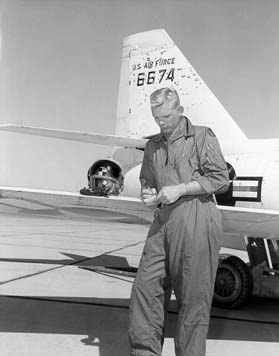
Captain Iven C. Kincheloe Jr.

1950's -- Captain Iven C. Kincheloe Jr. is pictured here following a high speed research flight. Kincheloe, the personification of the